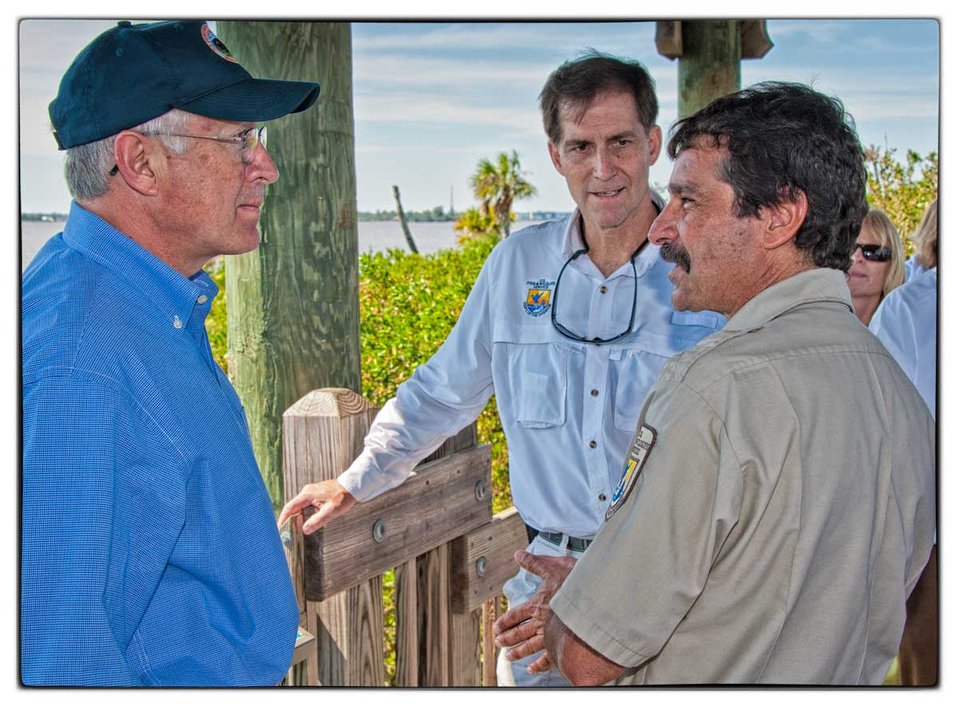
Secretary Salazar, Director Dan Ashe, and Charlie Pelizza

Secretary of the Interior Ken Salazar, U.S. Fish and Wildlife Service Director Dan Ashe, and Charlie Pelizza at Pelican Island National Wildlife Refuge